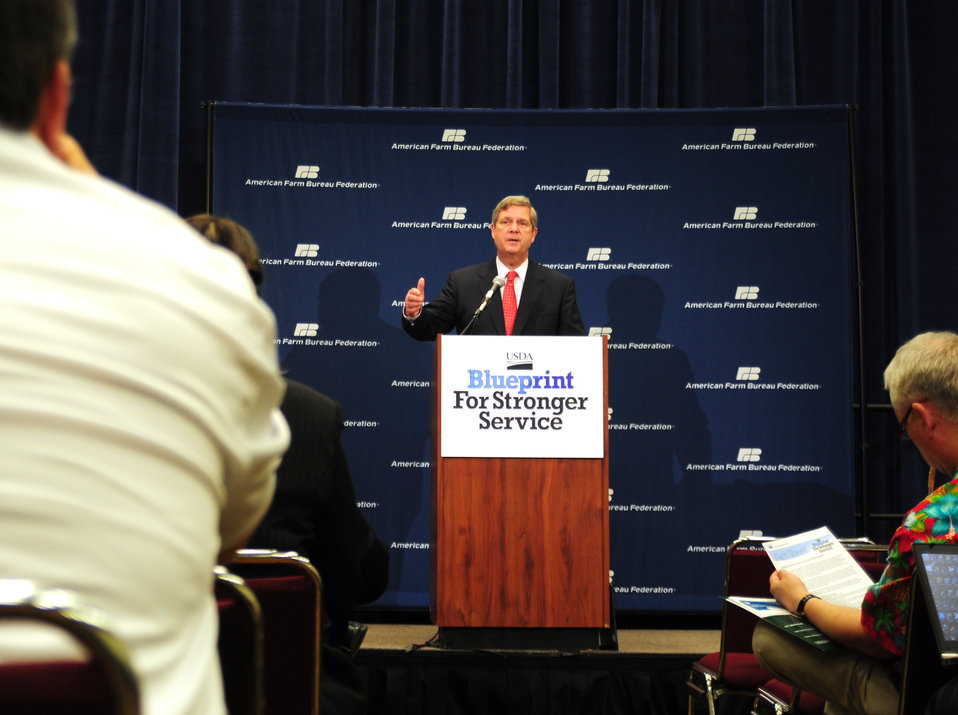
Agriculture Secretary Tom Vilsack presents USDA's Blueprint for Stronger Service, a plan to Increase Efficiency in USDA Operations, on Monday, January 9, 2012 in Honolulu, Hawaii.